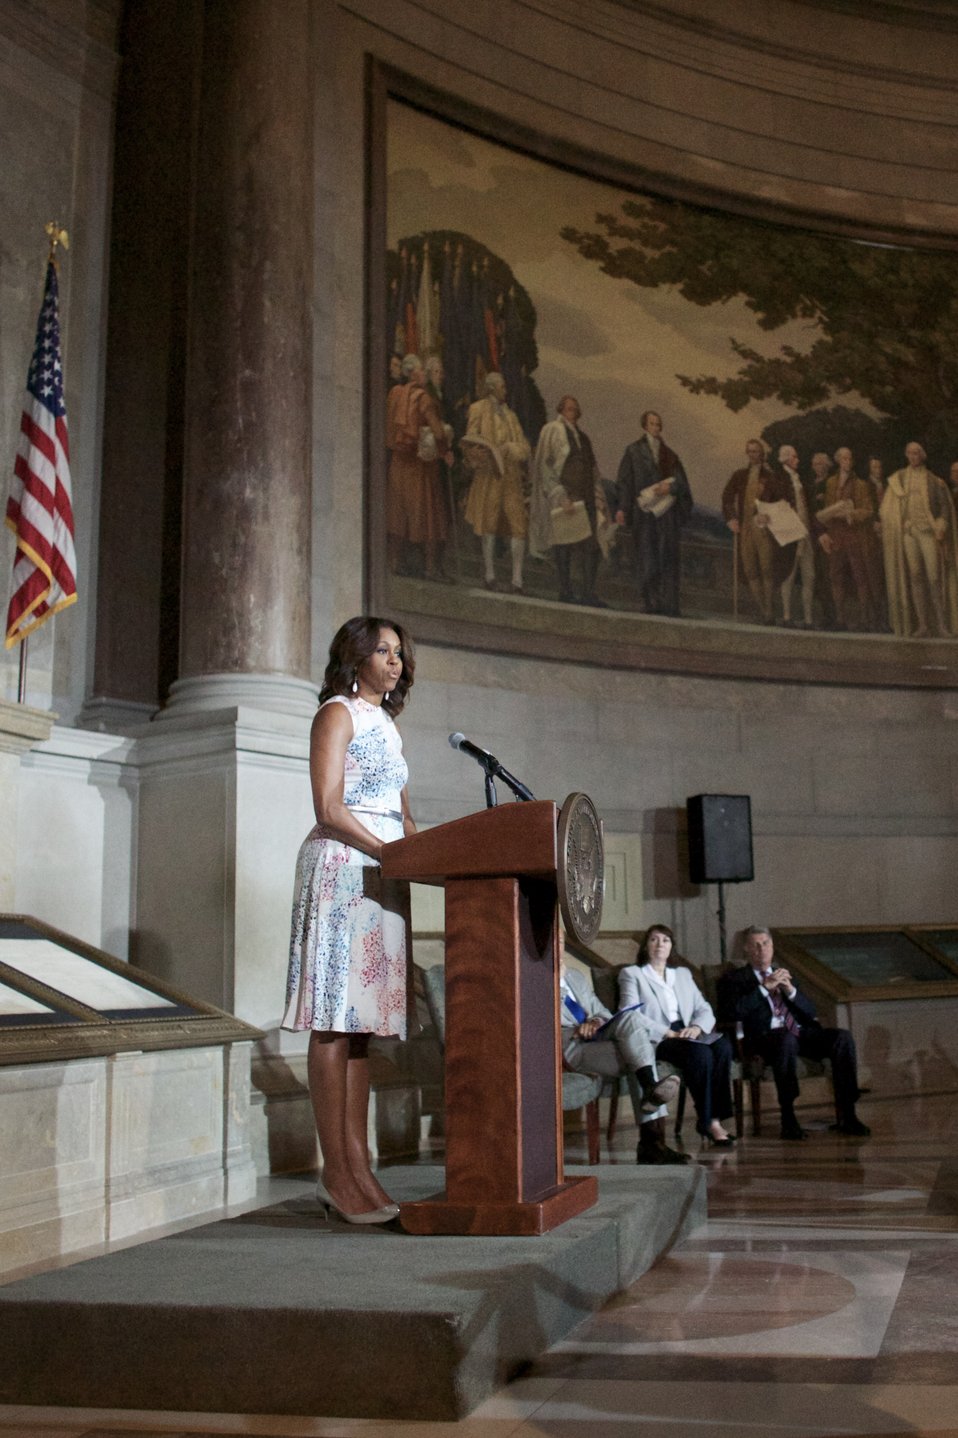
Naturalization Ceremony with Michelle Obama